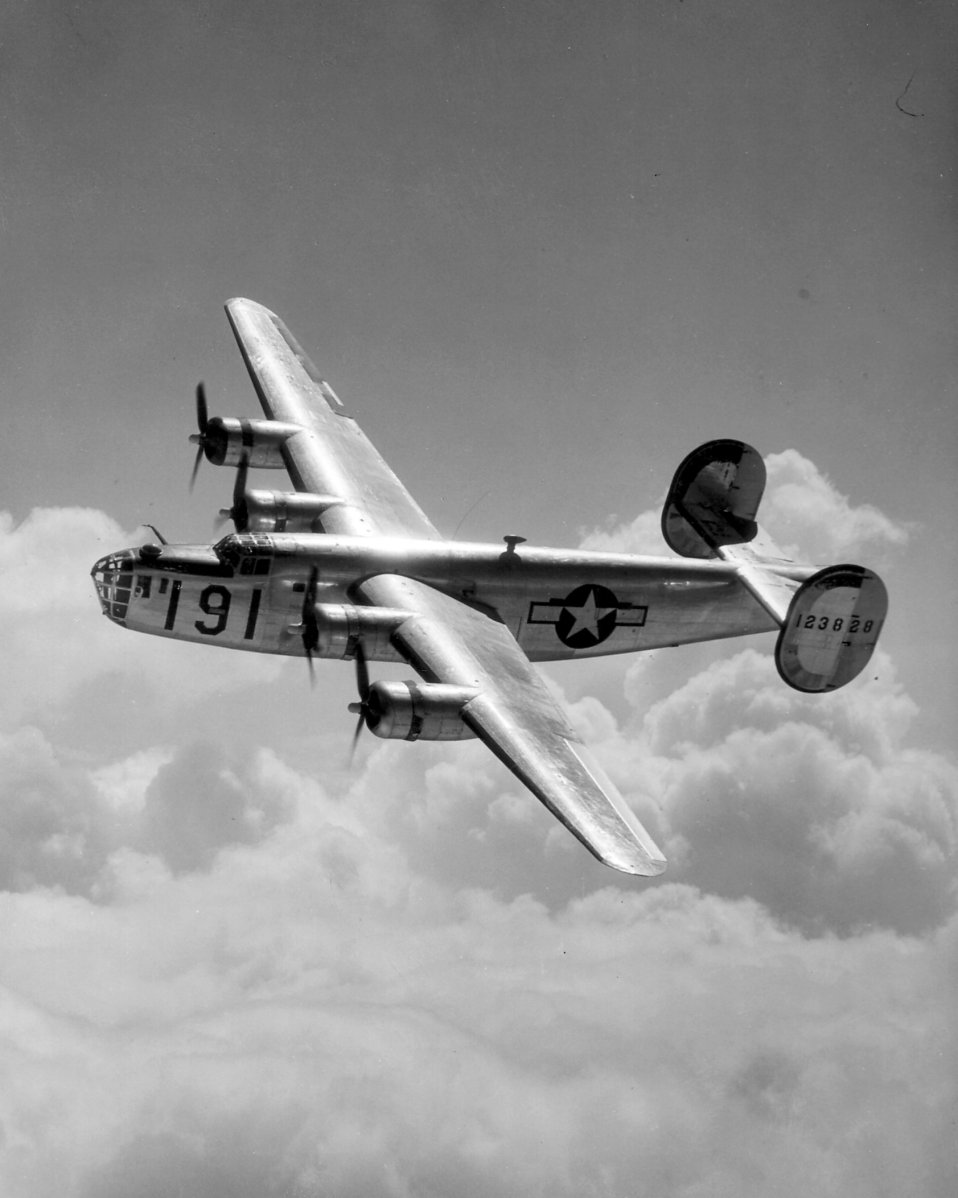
B-24 Liberator

1940's -- A Consolidated B-24 Liberator from Maxwell Field, Alabama, four engine pilot school, glistens in the sun as it makes a turn at high altitude in the clouds. Heavy Bombers.